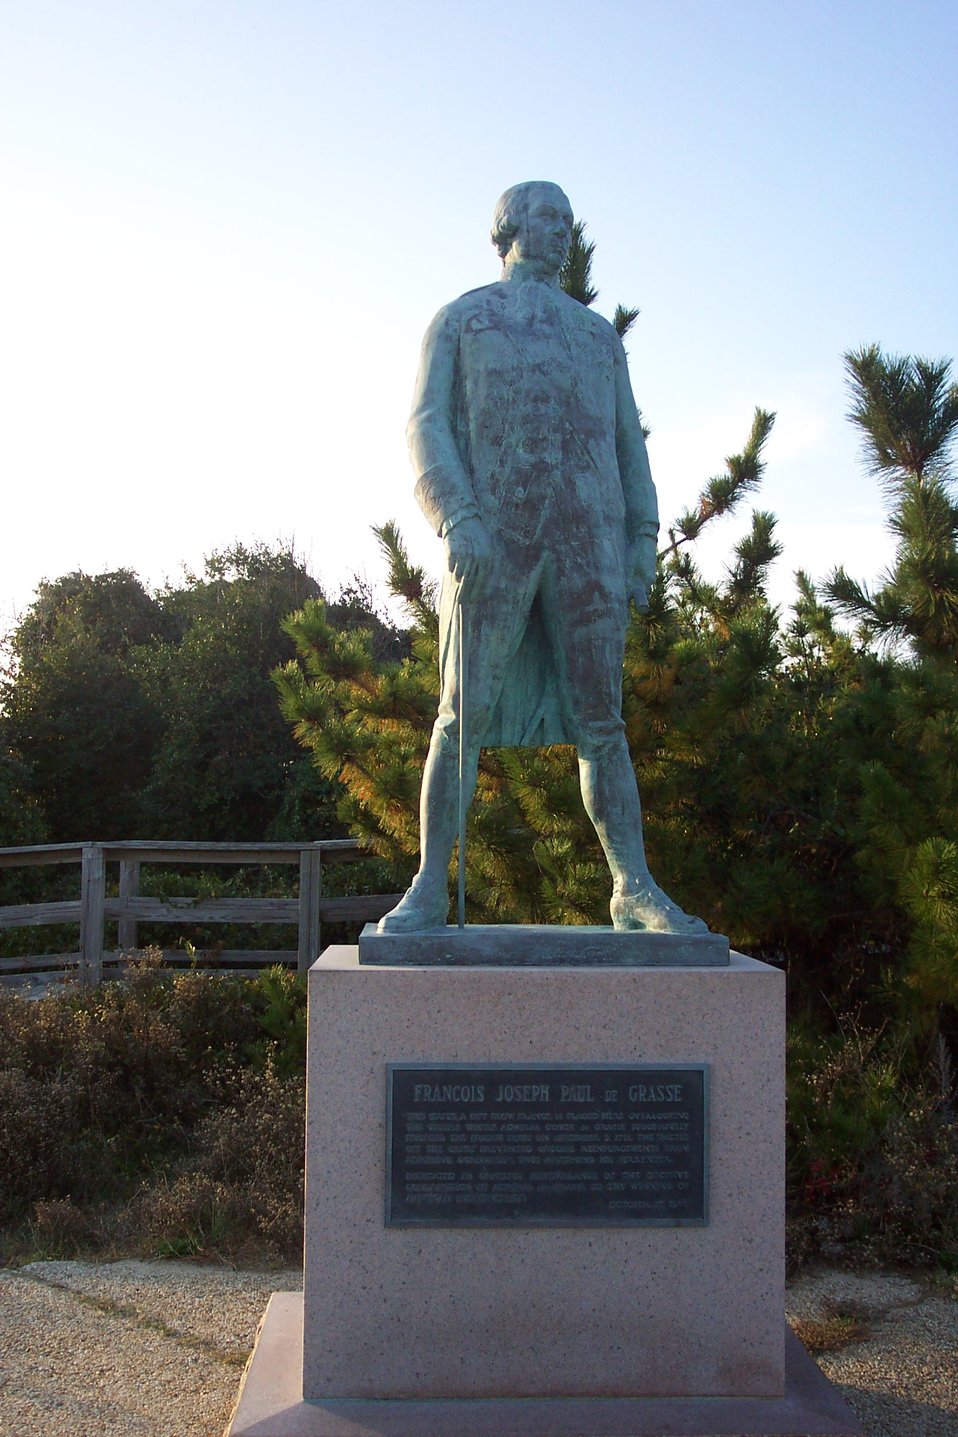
Statue of Admiral Francois Joseph Paul de Grasse, admiral of the French fleet that trapped the British Army at Yorktown in 1781, effectively ending the American Revolution with the defeat of Cornwallis.